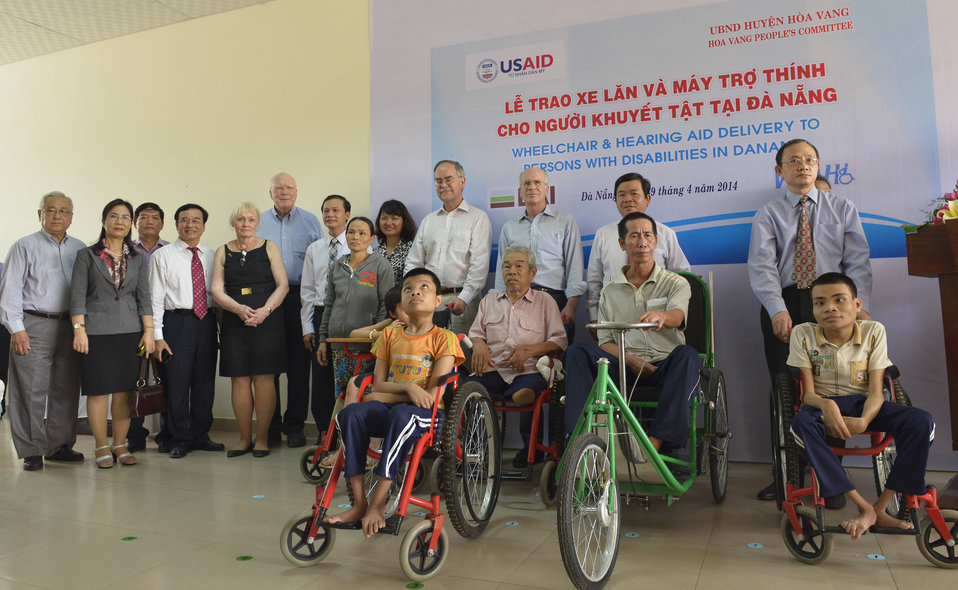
U.S. Congressional delegation attends a wheelchairs and hearing aids distribution event in Danang

Hoa Vang District Hospital, Danang, April 19, 2014.